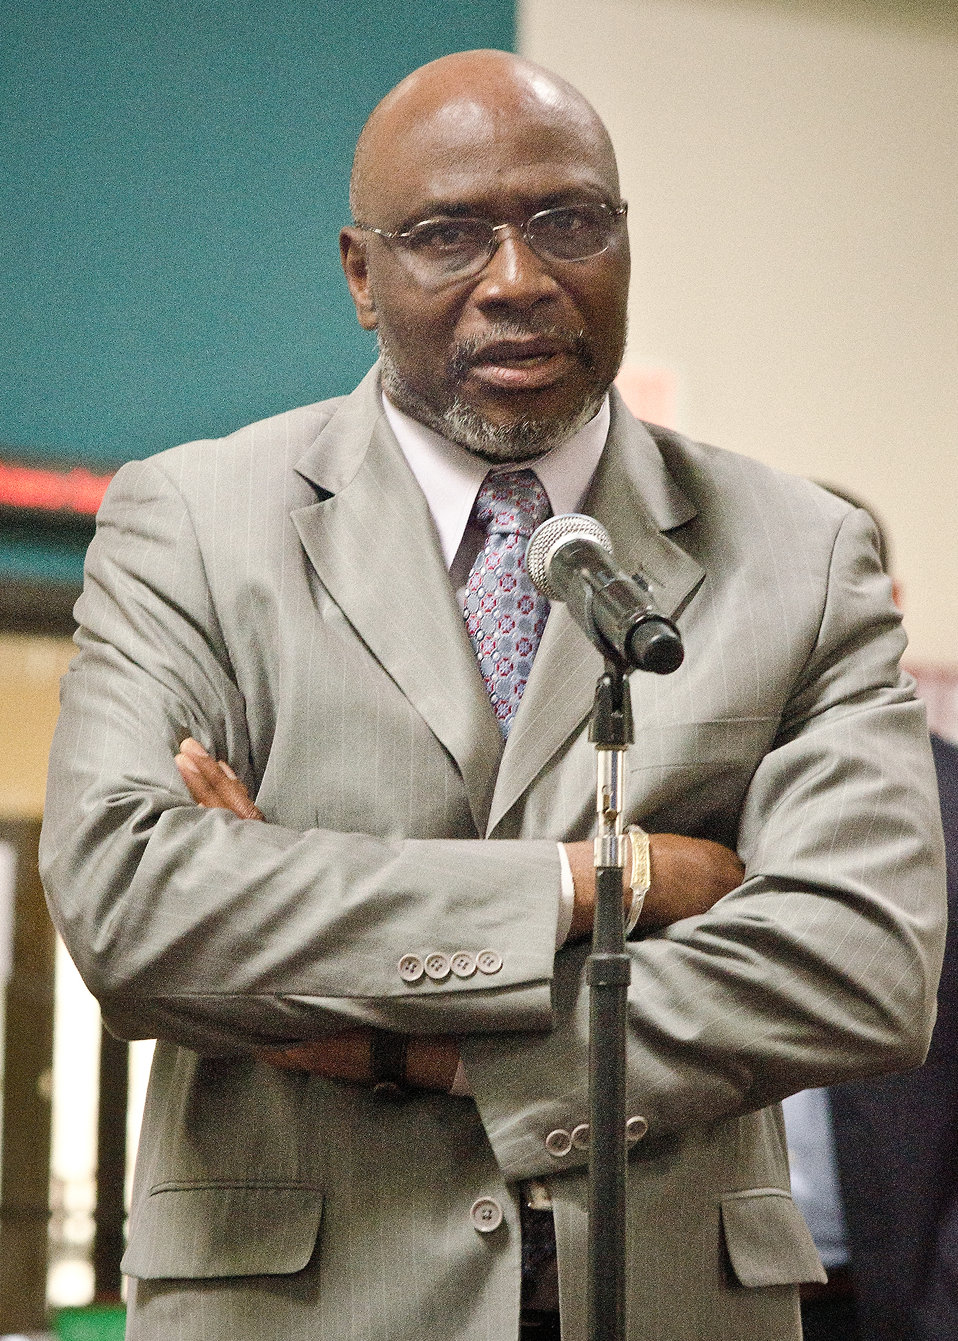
U.S. Department of Agriculture (USDA) employees were given the opportunity to ask Agriculture Secretary Tom Vilsack questions about the Blueprint for Stronger Service Initiative and hear directly from the Secretary of Agriculture, during the Ask The Secretary event held in the South Building Cafeteria, in Washington, D.C., on Wednesday, March 21, 2012, The Blueprint for Stronger Service Initiative aims to build a modern and efficient service organization that is closely timed with technological innovations - and better suited to respond to 21st century agricultural challenges.